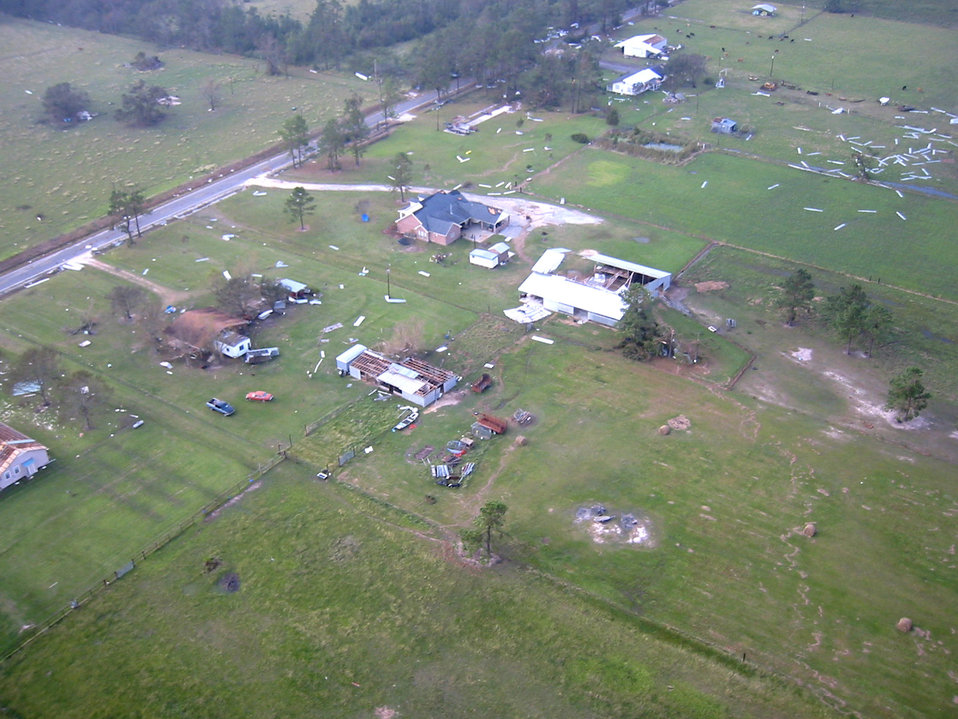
Search and rescue

RANDOLPH AIR FORCE BASE, Texas -- Homes near the Texas-Louisiana border lie damaged or destroyed following the pounding they took from Hurricane Rita's wind and rain. The homes were in an area searched by the 349th Air Expeditionary Group. The search-and-rescue unit, staging from here, is made up of active-duty and Reserve forces.